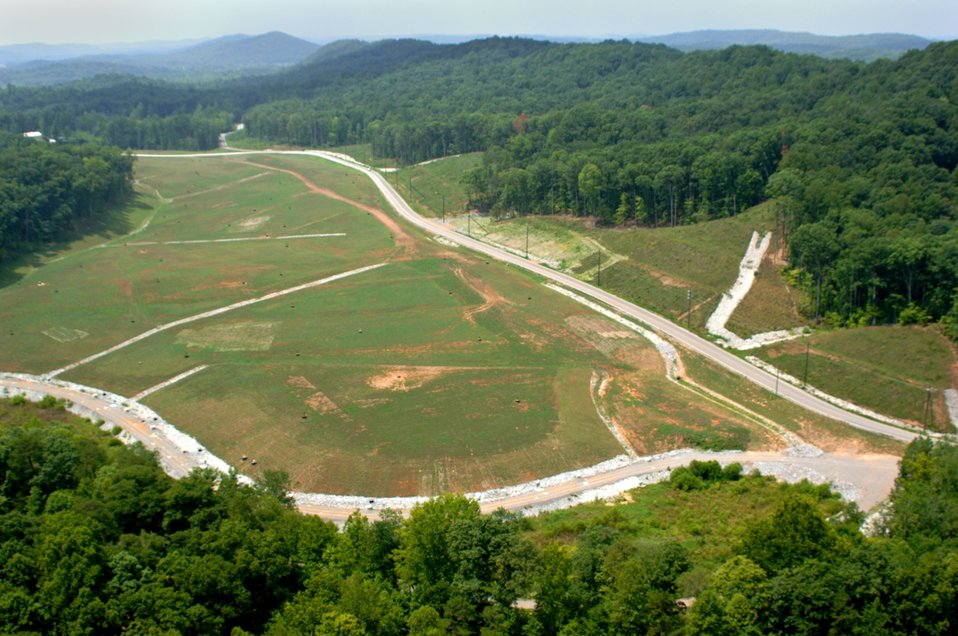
Oak Ridge Melton Valley After